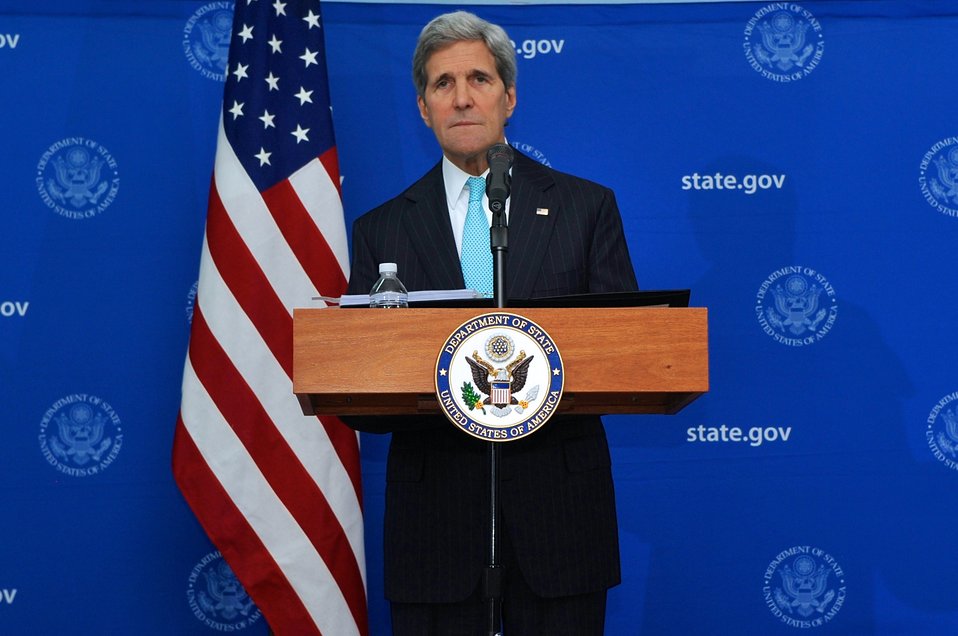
Secretary Kerry Addresses Reporters During News Conference in Juba

U.S. Secretary of State John Kerry speaks to reporters during a news conference that followed his meeting with South Sudanese President Salva Kiir Mayardit in Juba on May 2, 2014.